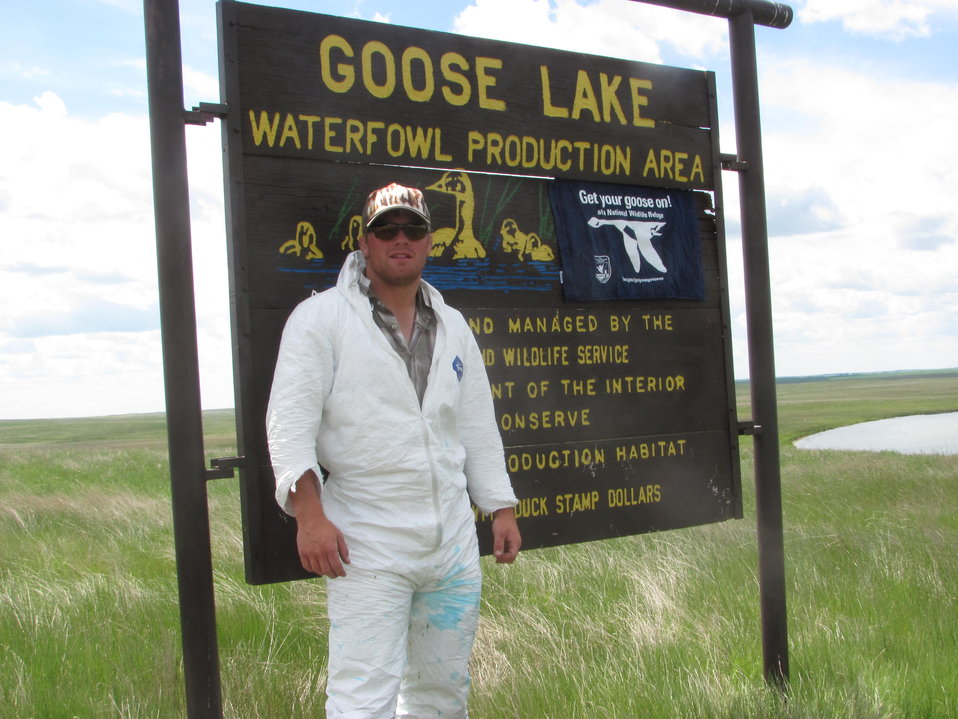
Get Your Goose On!

The Benton Lake National Wildlife Refuge traveling strike team Gets Their Goose On! at Medicine Lake.